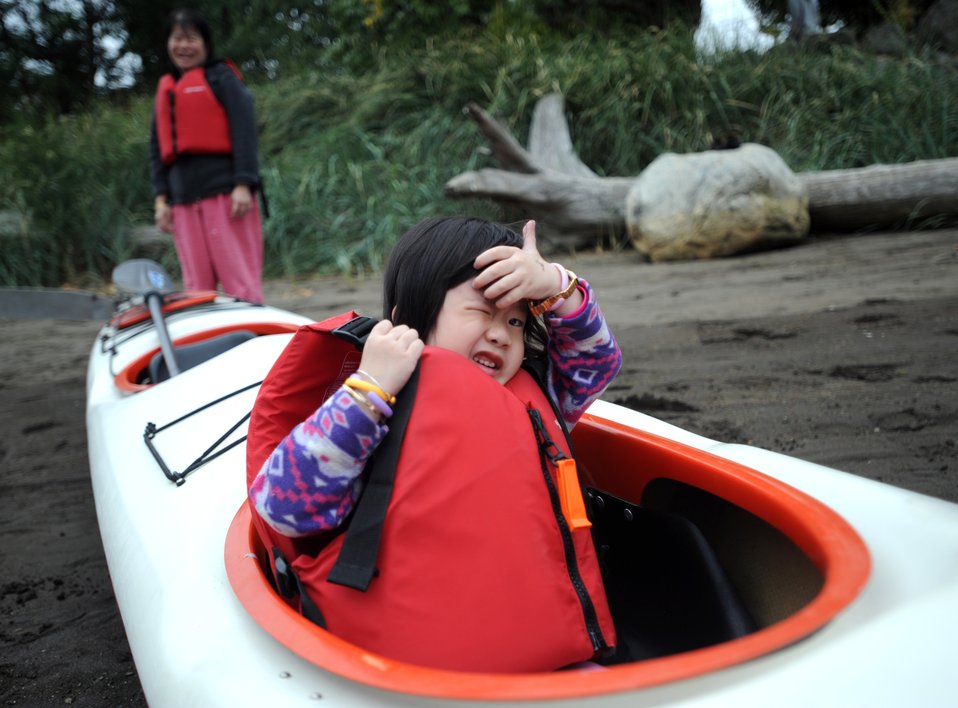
Kayak Tour

A young girl eyes the photographer as her mother looks on before heading out on a free guided tour of the Duwamish River at the 5th Annual Duwamish River Festival. Despite pollution, the river is still a popular spot for recreational boaters and several marinas are located along its banks. Visit www.epa.gov/region10/duwamish to learn more about EPA's efforts to clean up and restore the lower Duwamish River.